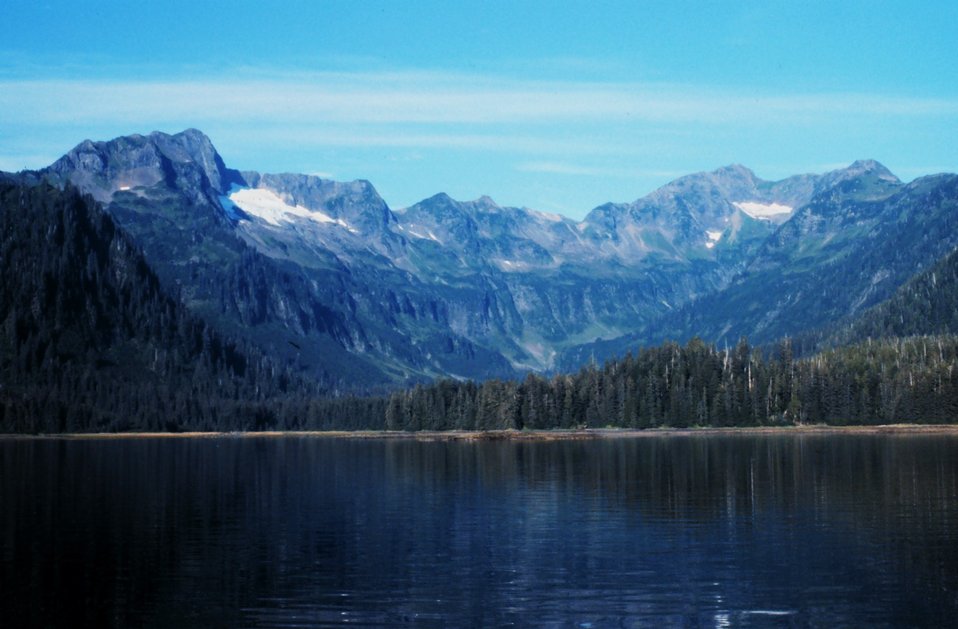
Stephens Passage